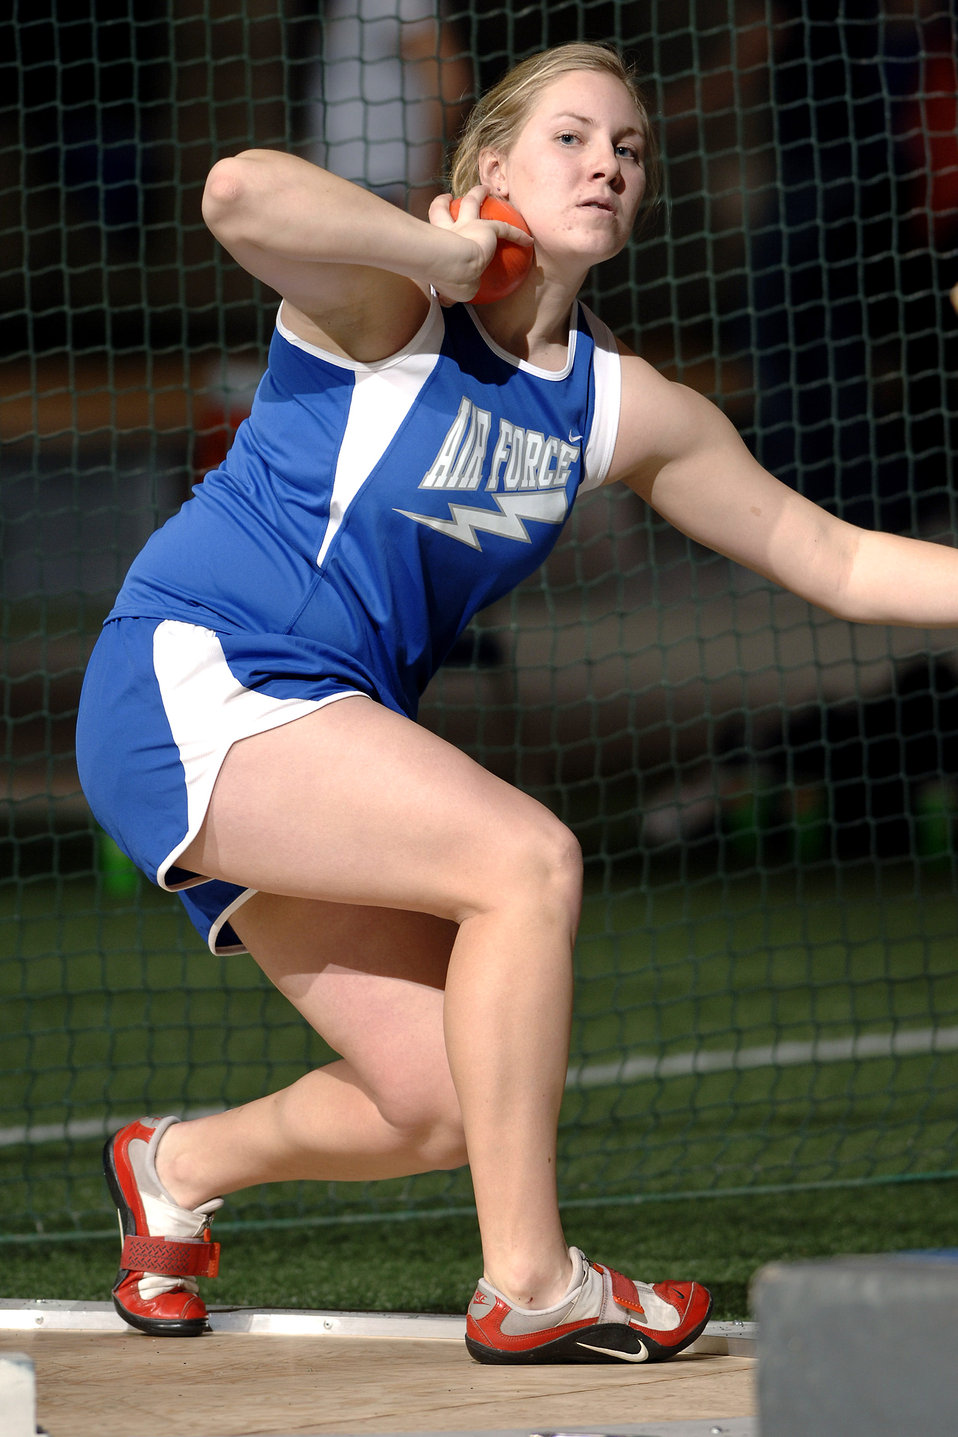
Shotput record

U.S. Air Force Academy Falcon sophomore Sara Neubauer, in winning the women's shotput, set a new Academy record with a throw of 48 feet 6 inches at the Air Force All-Comers Meet Jan. 13 at Colorado Springs, Colo. The mark was a personal improvement by nearly a foot. The Air Force track and field team officially opened the season by hosting the annual competition.